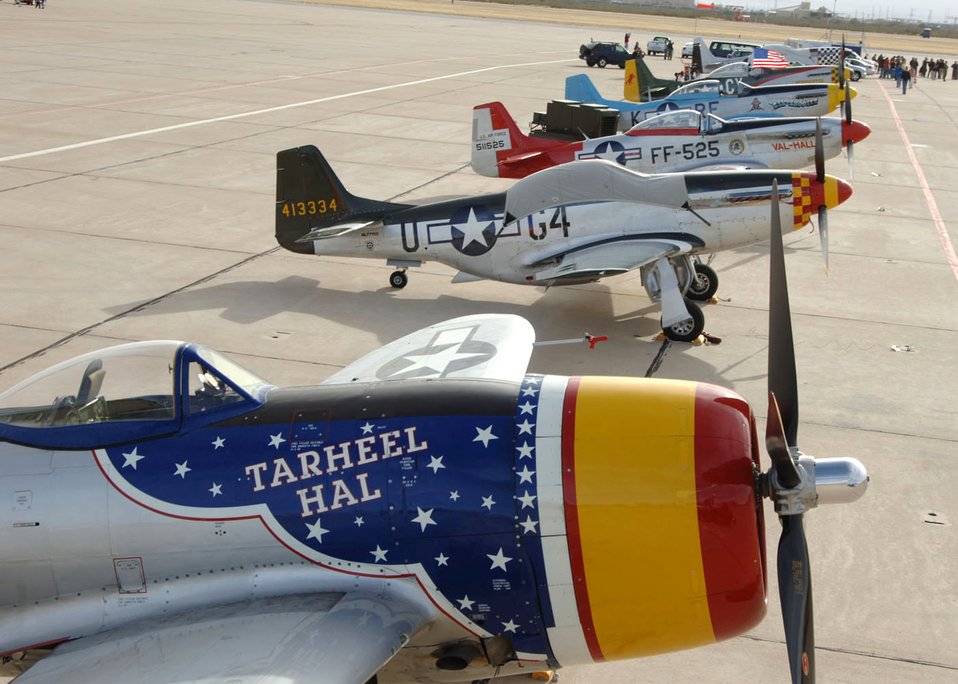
Heritage Conference mixes old with new

A P-47 Thunderbolt and several P-51 Mustangs rest on the Davis-Monthan Air Force Base, Ariz., ramp March 4 after a busy few days at the 2007 Heritage Conference there. The conference provided an opportunity for Air Combat Command demonstration pilots to train together with modern and historic military aircraft in preparation for the upcoming air-show season.